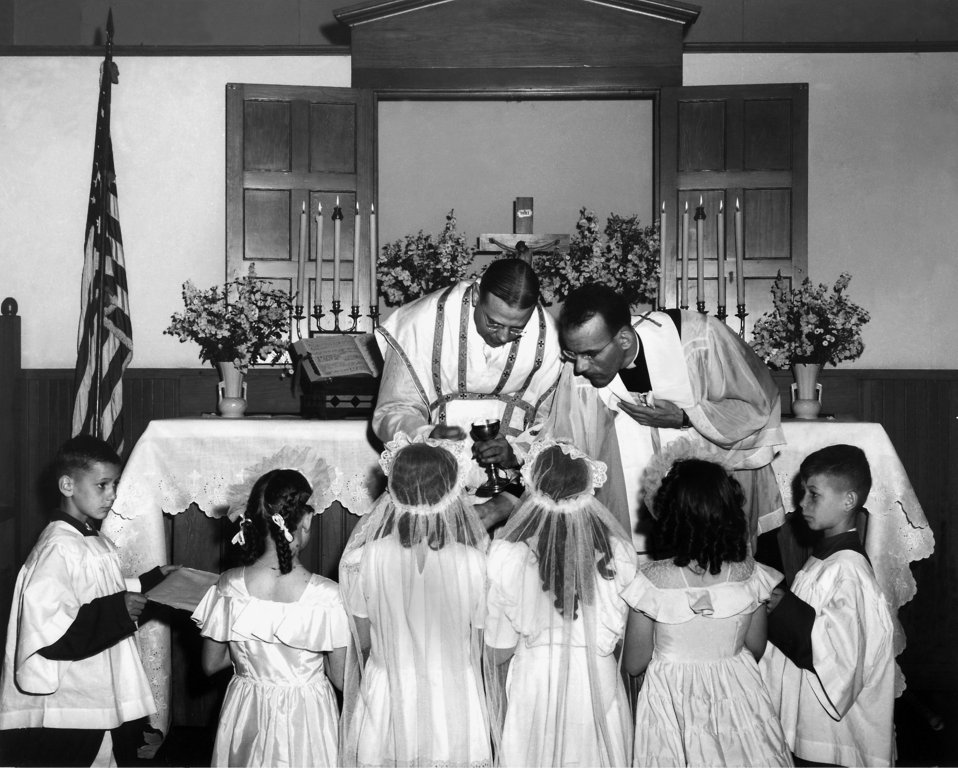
First Communion at Catholic church Oak Ridge

657-1 DOE photo Ed Westcott First Communion at Catholic church Oak Ridge Tennessee
6/3/45